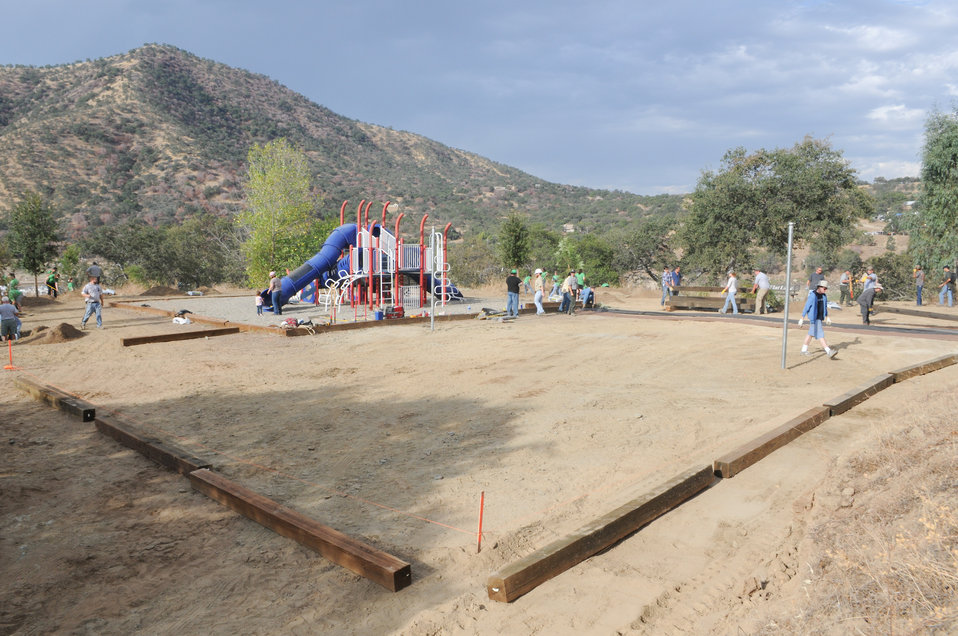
National Public Lands Day at Pine Flat Lake

Volunteers begin construction of a sand volleyball court at Pine Flat Lake near Sanger, Calif., Sept. 24 in celebration of National Public Lands Day. More than 60 volunteers turned out to help plant trees and build the court and horseshoe pits at the park. Pine Flat was one of seven U.S. Army Corps of Engineers Sacramento District recreation parks that participated in the event.